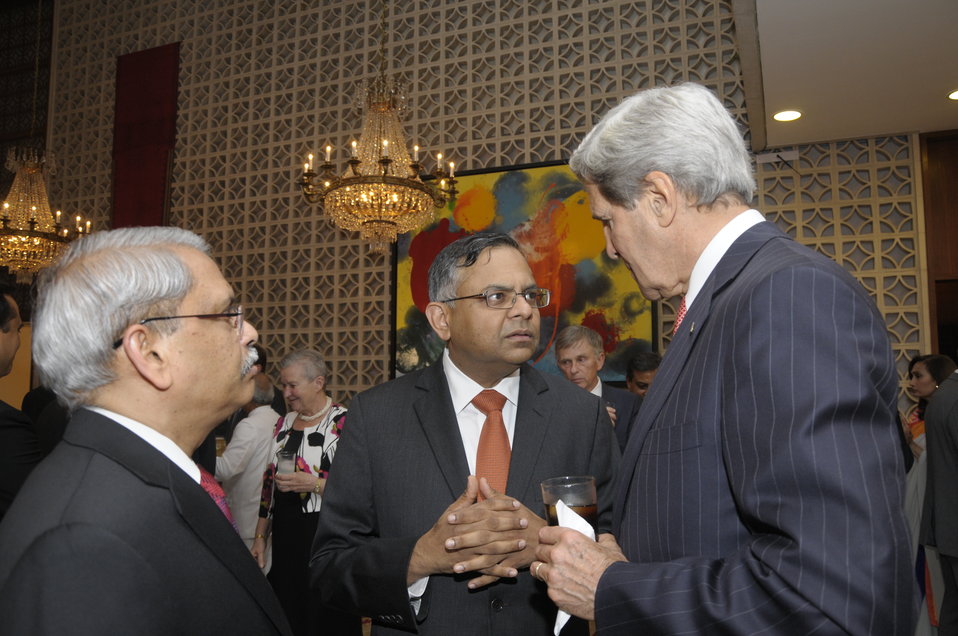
Secretary Kerry Participates in a Business Leaders Dinner

U.S. Secretary of State John Kerry participates in a business leaders dinner at the Roosevelt House, the residence of the U.S. Ambassador, in New Delhi, India on June 23, 2013.